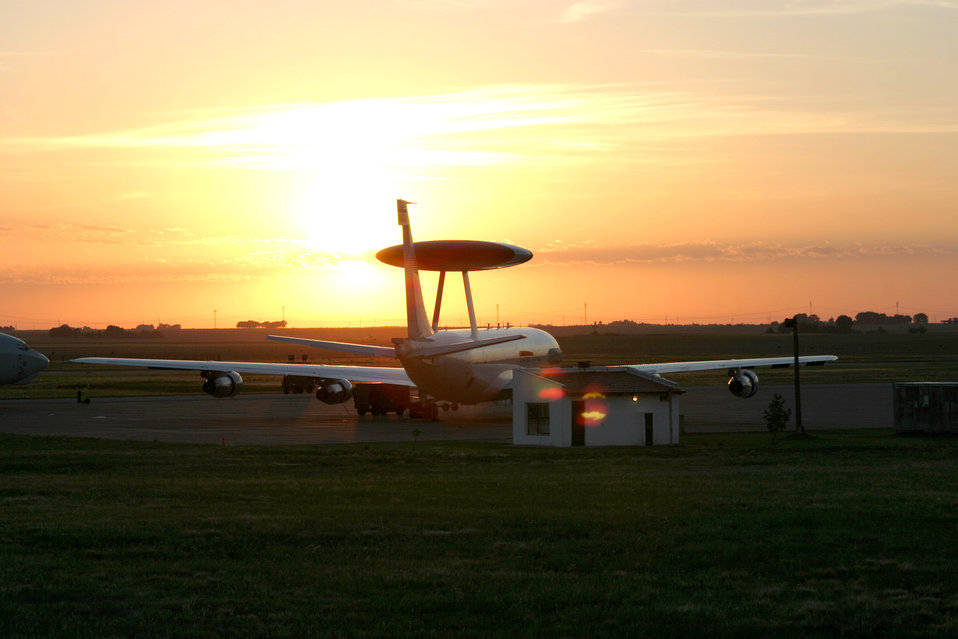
AWACS support

BASE AERONAVAL COMMANDANTE ESPORA, Argentina (AFPN) -- The sun rises over an E-3 Sentry airborne warning and control system aircraft here. Airmen from the 552nd Air Control Wing at Tinker Air Force Base, Okla., deployed to Argentina to provide airborne surveillance for the Summit of the Americas. President George Bush and 33 North and South American leaders convened to discuss solutions to common political, economic and social problems.